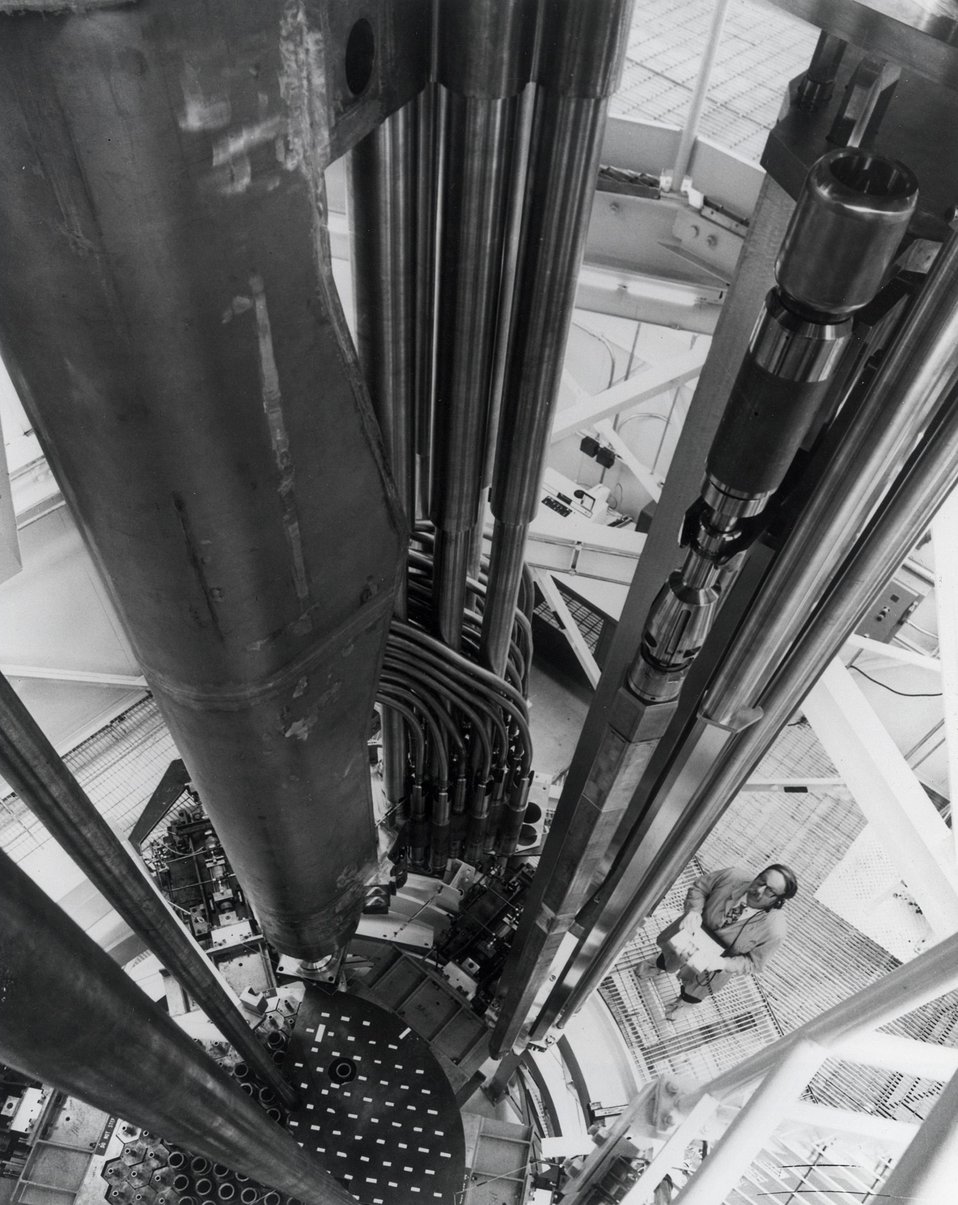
The array of instruments will monitor the behavior of nuclear fuel during reactor operations. Circa 1975.